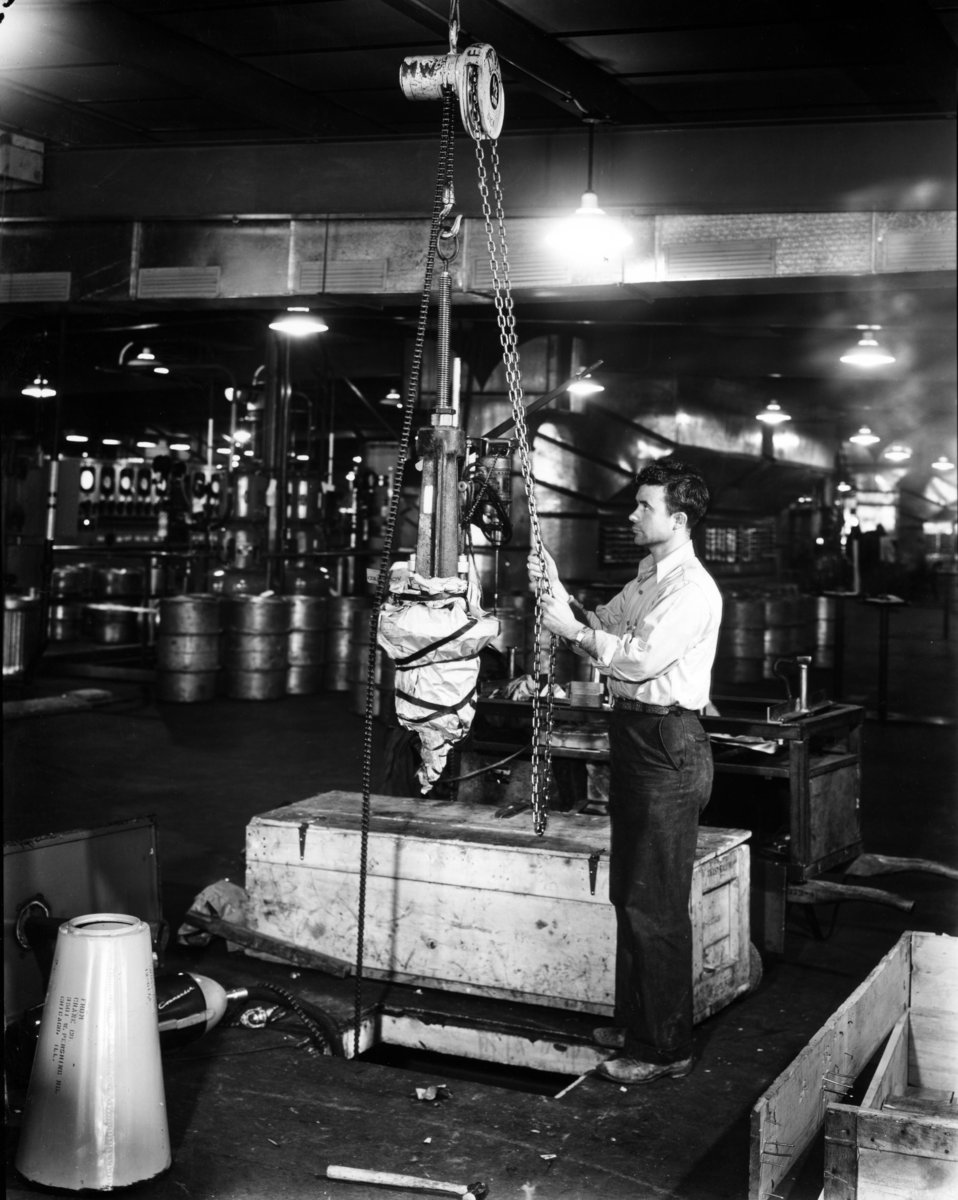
K-25 at Oak Ridge